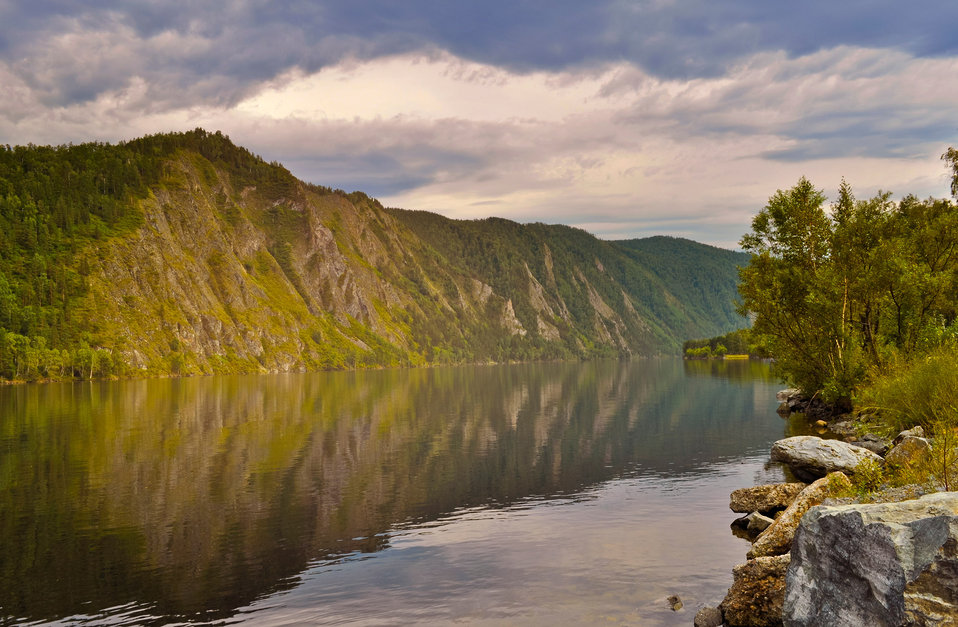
Summer in the mountains

Summer landscape with mountains.